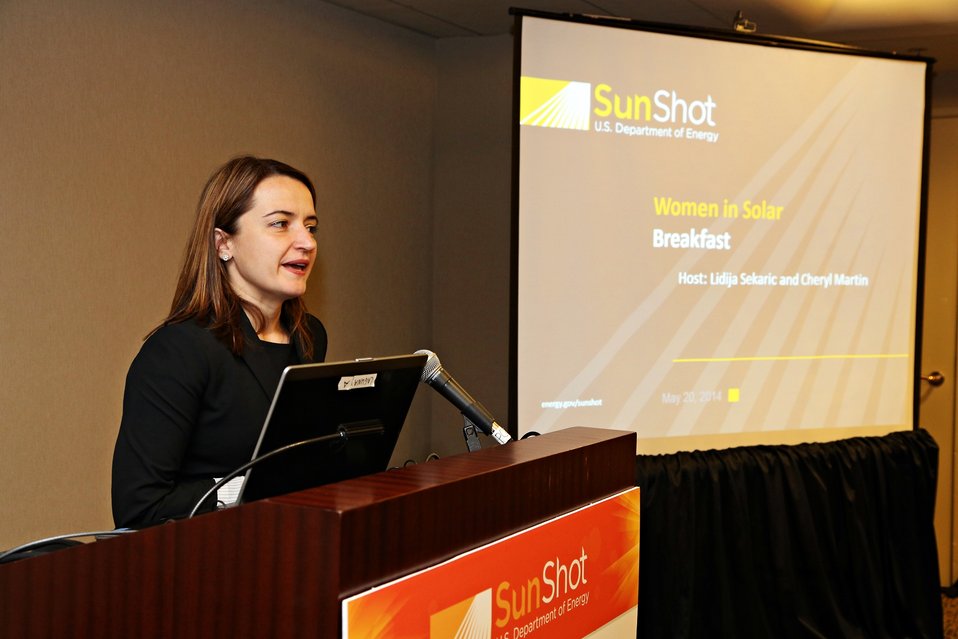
Women in Solar Breakfast 3

Lidija Sekaric, SunShot's Technology to Market Program Manager speaking at the Women in Solar Breakfast.